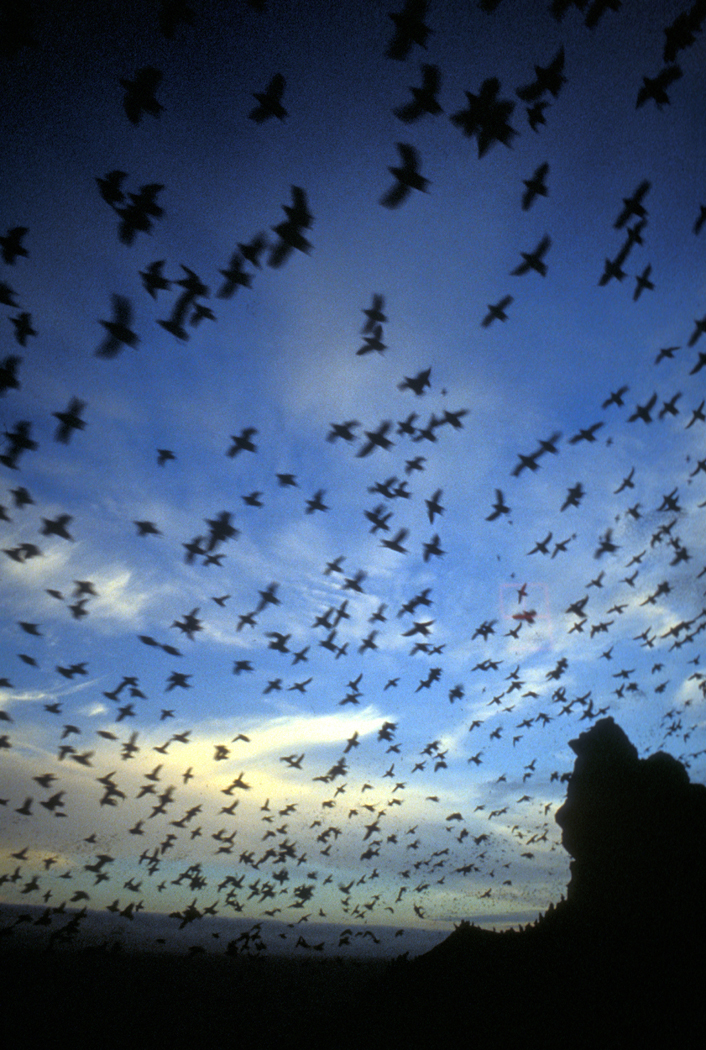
birds in flight

St. George Island, Alaska Maritime National Wildlife Refuge